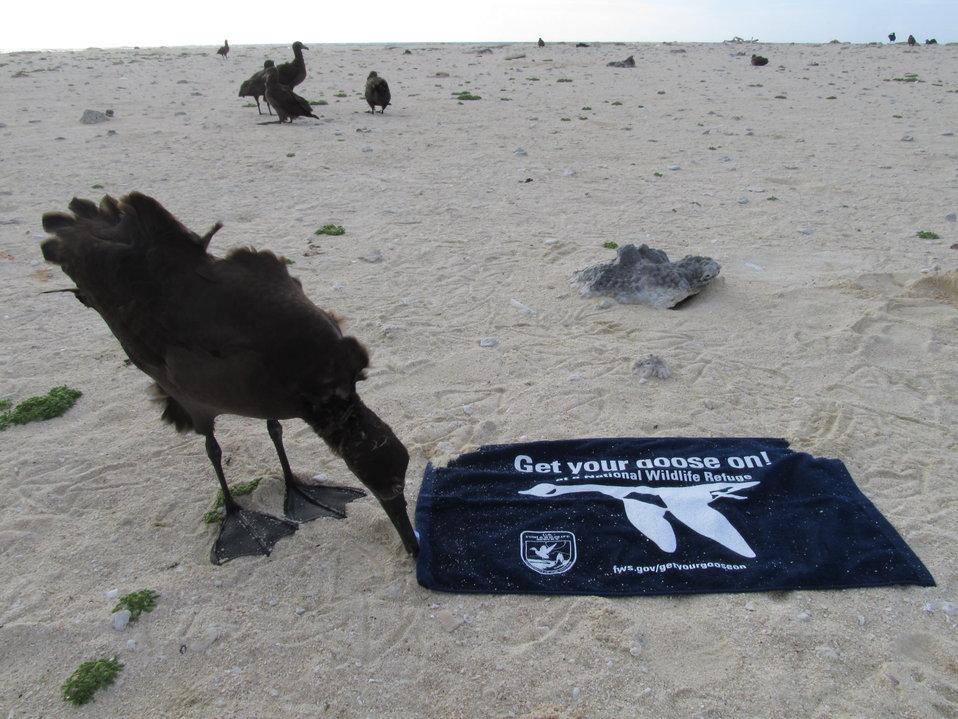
Get Your Goose On! - Albatross Style

Photo taken at Laysan Island in the Papahanaumokuakea Marine National Monument, Hawaiian Islands National Wildlife Refuge. Laysan is located approximately 800 miles northwest of Honolulu, Hawaii and is a remote field camp staffed year round for habitat restoration and population monitoring.